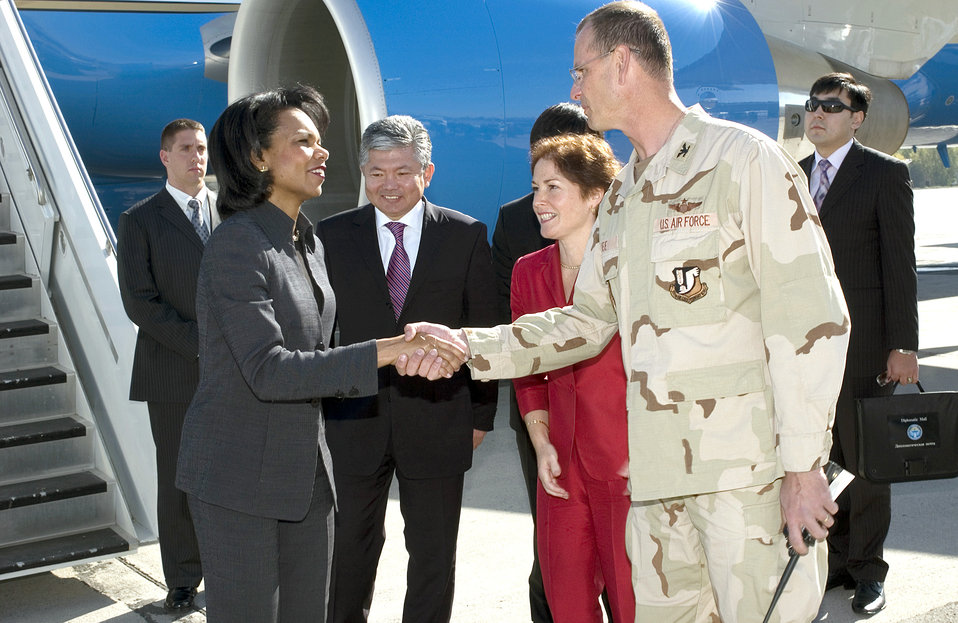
Secretary of State visits Manas, inspires troops

MANAS AIR BASE, Kyrgyzstan -- Col. Randy Kee greets U.S. Secretary of State Condoleezza Rice as she steps off the plane here Oct. 11. Colonel Kee is the 376th Air Expeditionary Wing commander.